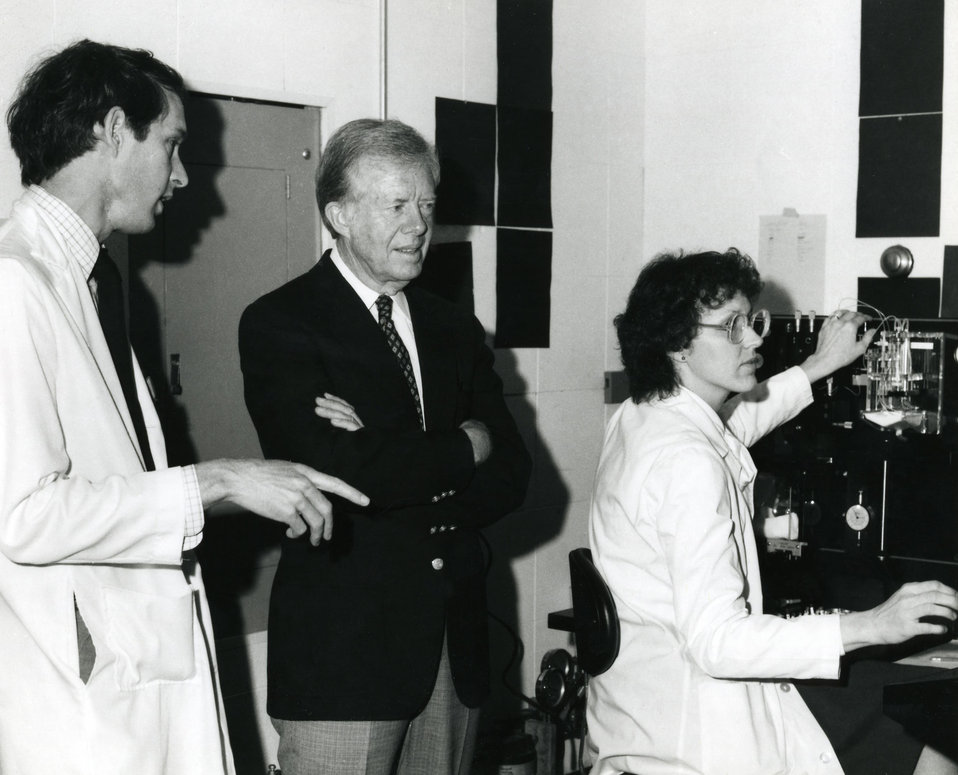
This photograph showed former U.S. President Jimmy Carter (1977-1981) as he was speaking with laboratorians during his 1985 visit to the Centers for Disease Control and Prevention (CDC).